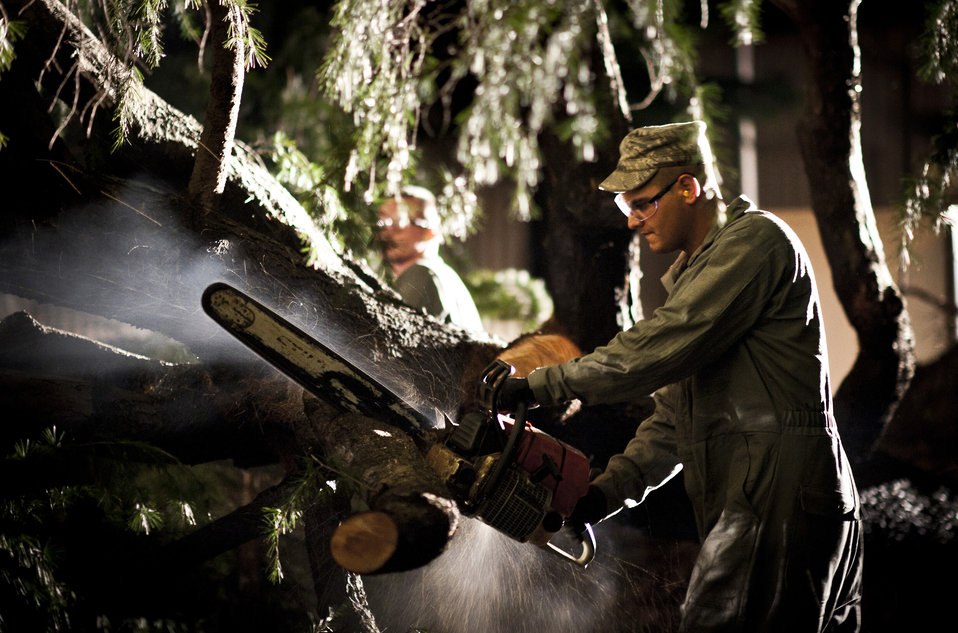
Yokota Air Base weathers Tropical Storm Roke

A heavy equipment operator from the 374th Civil Engineer Squadron cuts a downed tree from Tropical Storm Roke Sep. 21, 2011, at Yokota Air Base, Japan.